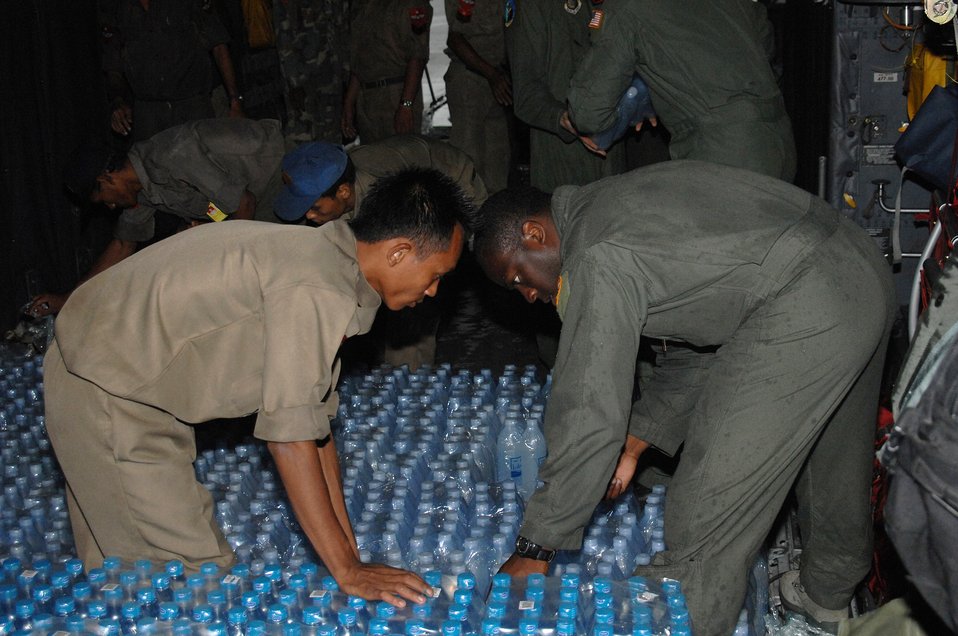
Joint Task Force Caring Response brings help to Burma

Capt. Kristopher Duckett assists with the delivery of humanitarain relief supplies delivered May 19 at the Yangon International Airport in Burma. Capt Duckett is a pilot with the 374th Airlift Wing from Yokota Air Base, Japan. The relief supplies will be delivered to the citizens of Burma who were devastated by a recent cyclone.